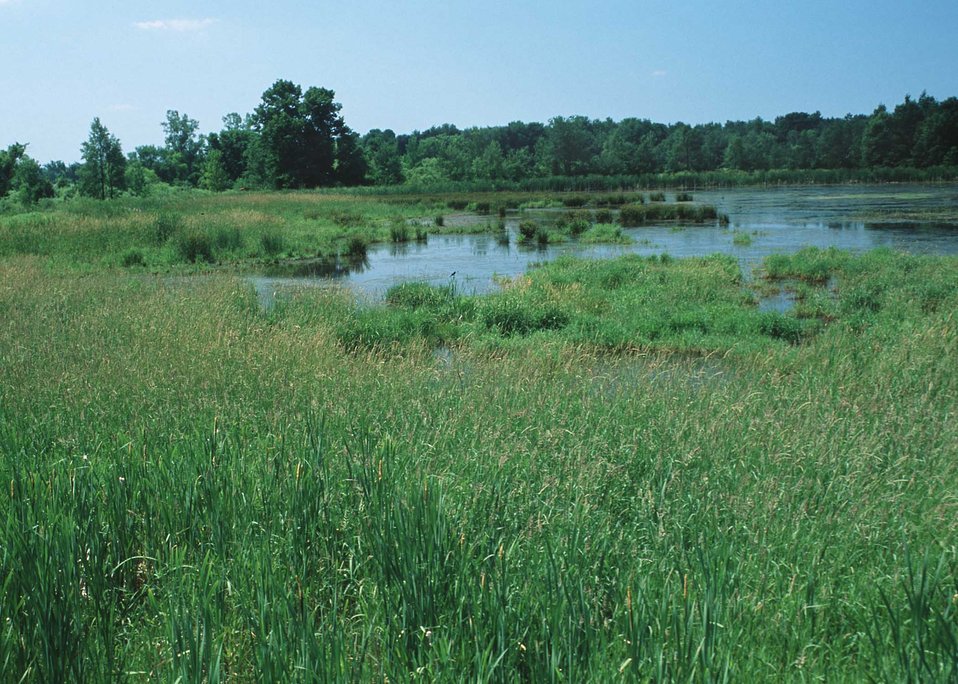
Open water wetland. Newaygo County, Michigan.